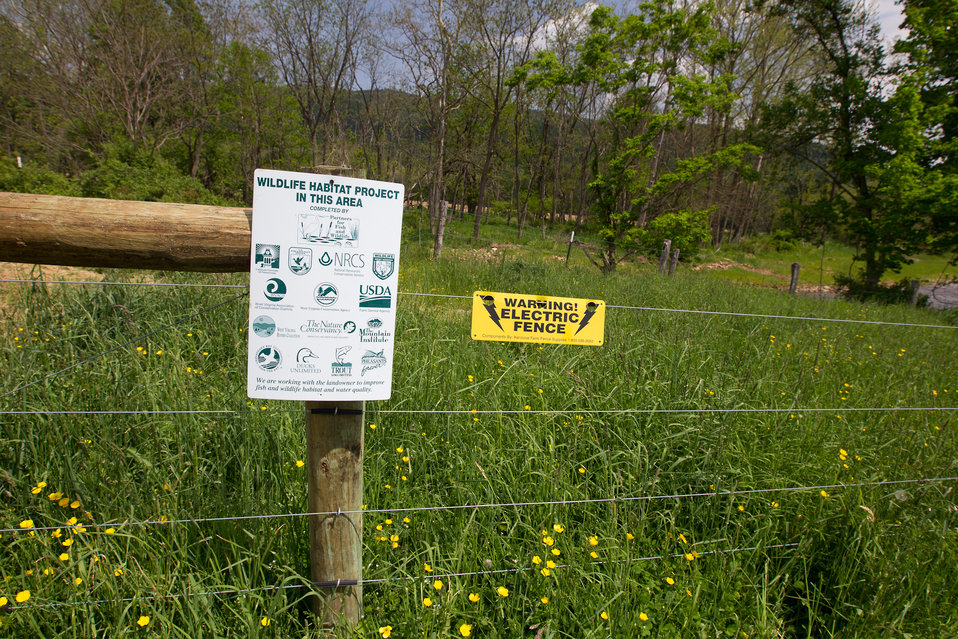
Celebrating 1 Million Feet of Conservation Fence in WV

Partners for Fish and Wildlife Program